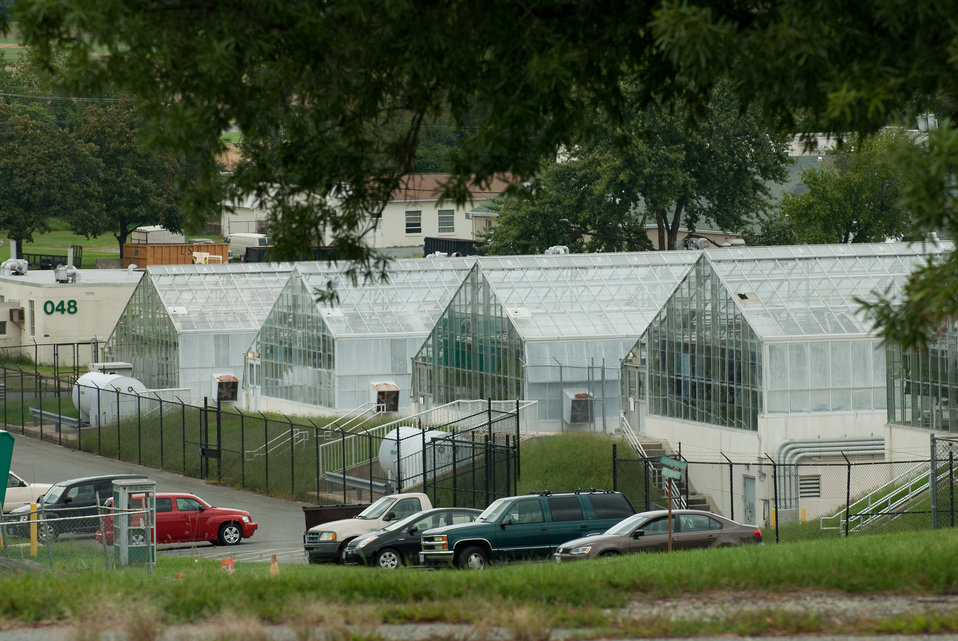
United States Department of Agriculture, Beltsville Agricultural Research Center, greenhouses in Beltsville, MD, on Wednesday, September 21, 2011.